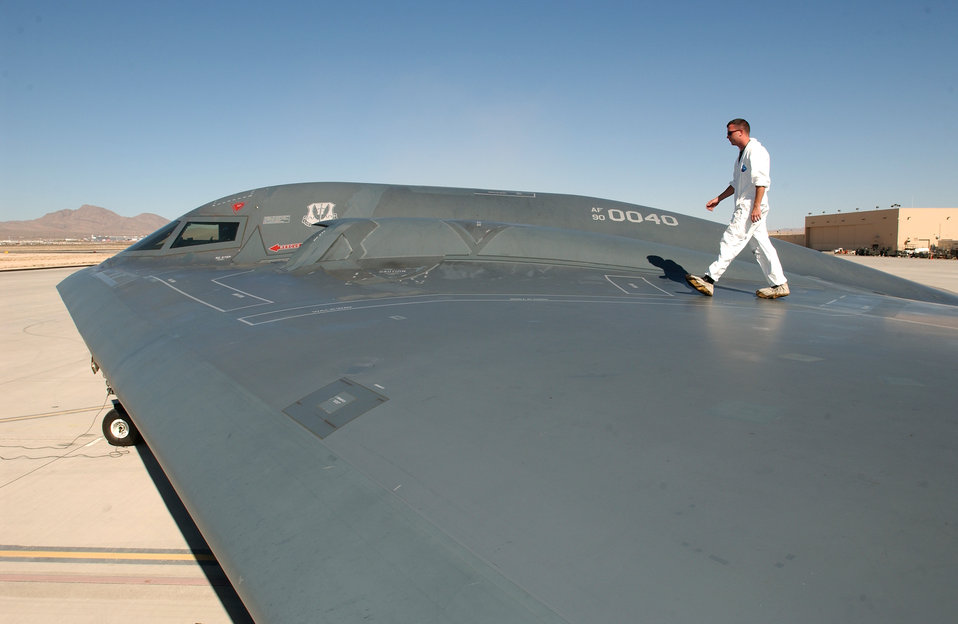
On a wing and a prayer

NELLIS AIR FORCE BASE, Nev. -- Tech. Sgt. Kevin Ponton examines the wing surface of a B-2 Spirit Bomber here Oct. 21. Ponton is a structural maintenance technician from the 509th Aircraft Maintenance Squadron at Whiteman Air Force Base, Mo. He and several other Whiteman airmen were here for a Red Flag exercise. The exercise allows combat aircrews to train in a simulated-war environment.